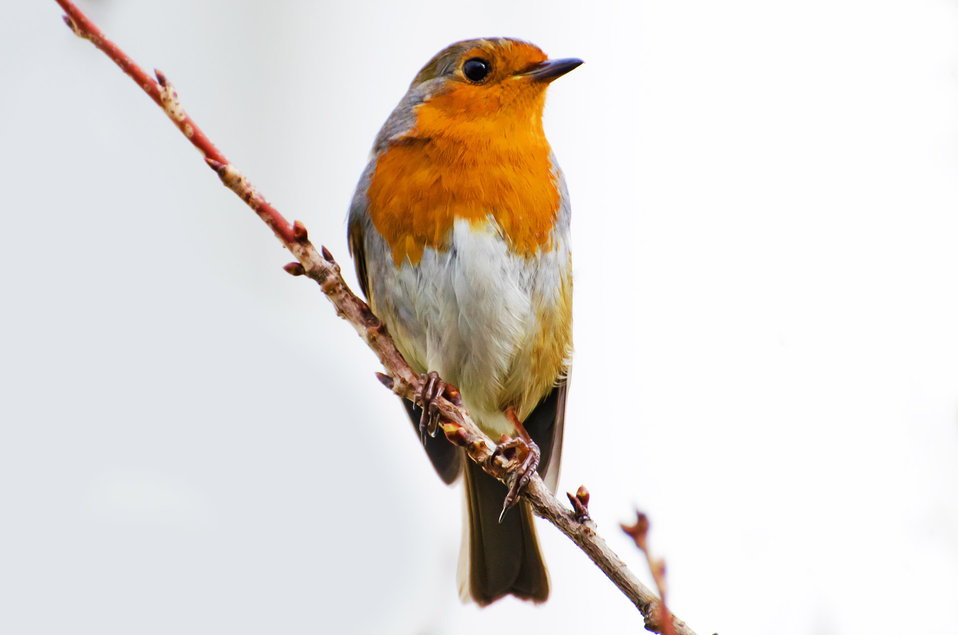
Bird, robin - erithacus rubecula

Robin - erithacus rubecula.